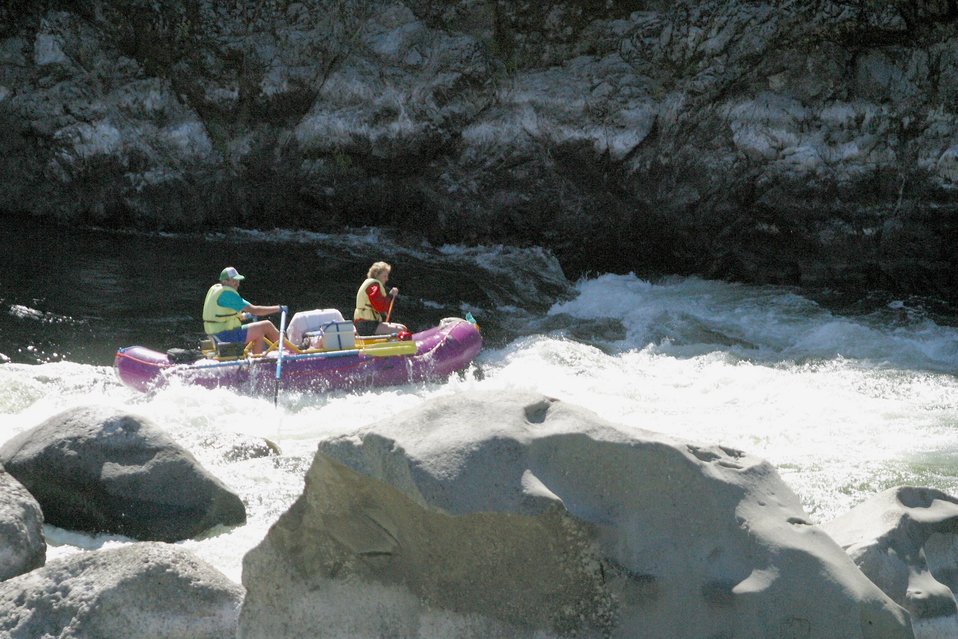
Boaters negotiate Blossom Rapids.